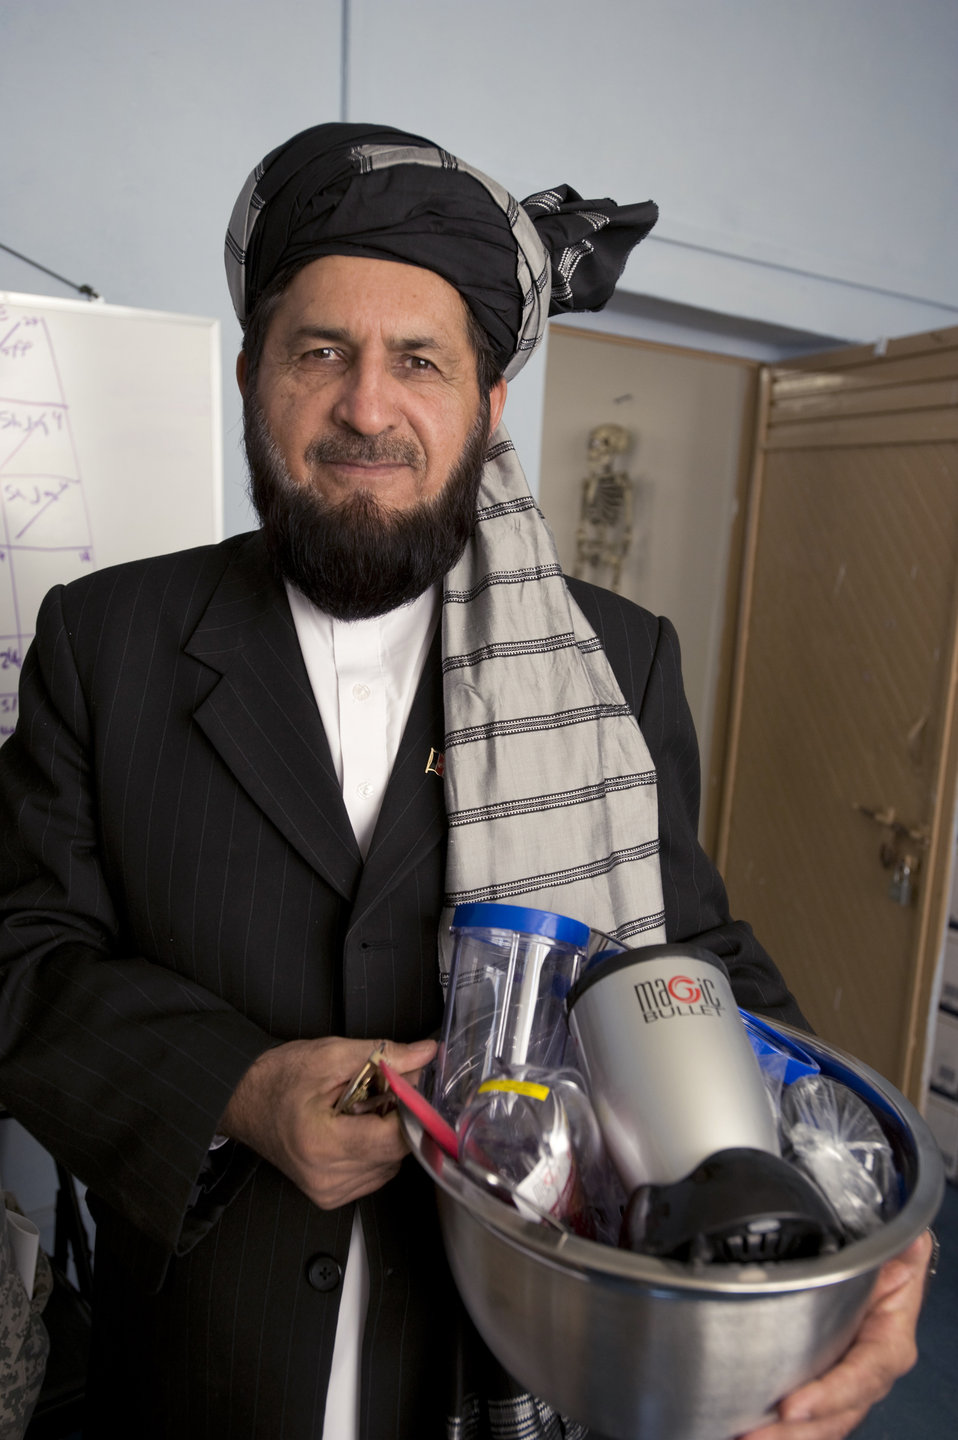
Servicemembers help malnourished Afghan children

Zabul Governor Delbar Jan Arman shows his appreciation for the work being done to fight malnutrition by the Zabul Provincial Reconstruction Team Oct. 16 in Qalat, Afghanistan.